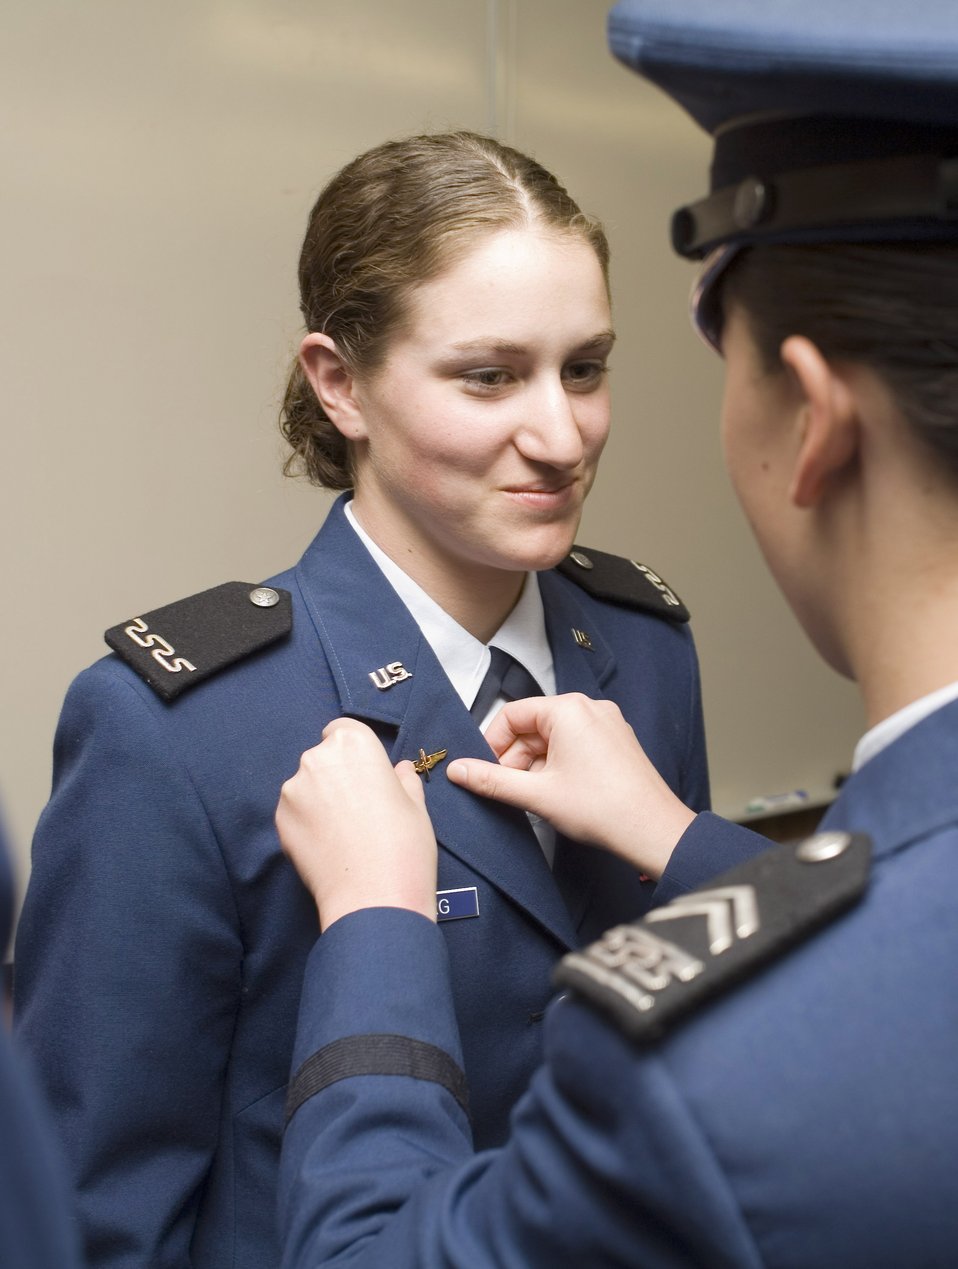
Class of 2009 formally recognized

Cadet 4th Class Roberta Nitzberg of Cadet Squadron 8 receives her much-anticipated prop and wings during a formal ceremony Saturday, March 18, 2006, at the U.S. Air Force Academy, Colo.